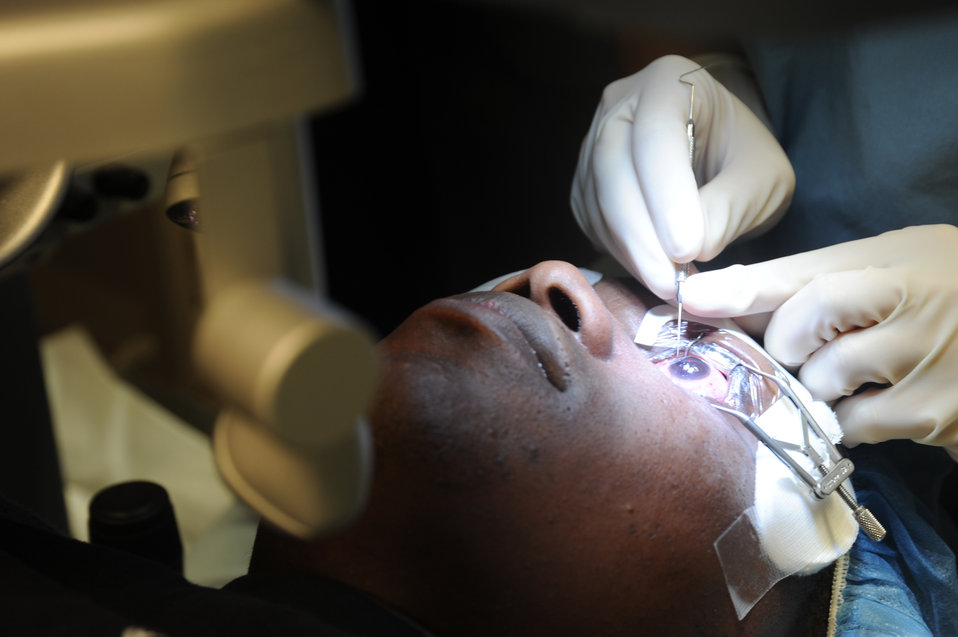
WMHC LASIK

Maj. (Dr.) Vashuda Panday lifts the corneal flap of Army Staff Sgt. Stanley Arnold as a step in his LASIK refractive surgery March 3, 2011, at Lackland Air Force Base, Texas. Dr. Panday is the chief of cornea refractive surgery at the Joint Refractive Surgery Center and Sergeant Arnold is an instructor and infantryman at Ft. Huachuca, Ariz.